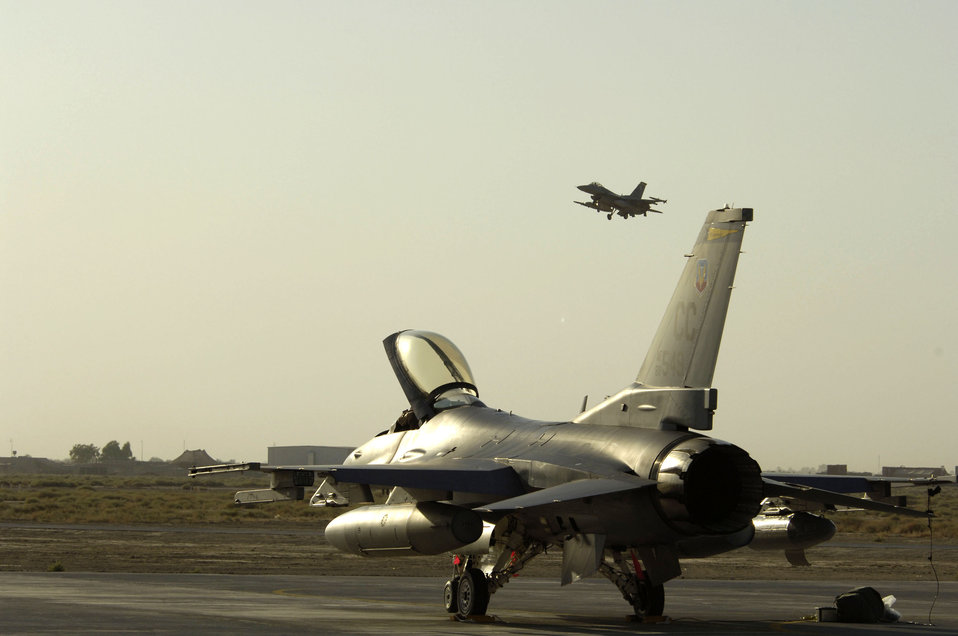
Cannon F-16s support Operation Iraqi Freedom

One F-16 Fighting Falcon taxis while another takes off from Balad Air Base, Iraq, Sept. 9. The F-16s, from Cannon Air Force Base, N.M., just arrived to support Operation Iraqi Freedom.